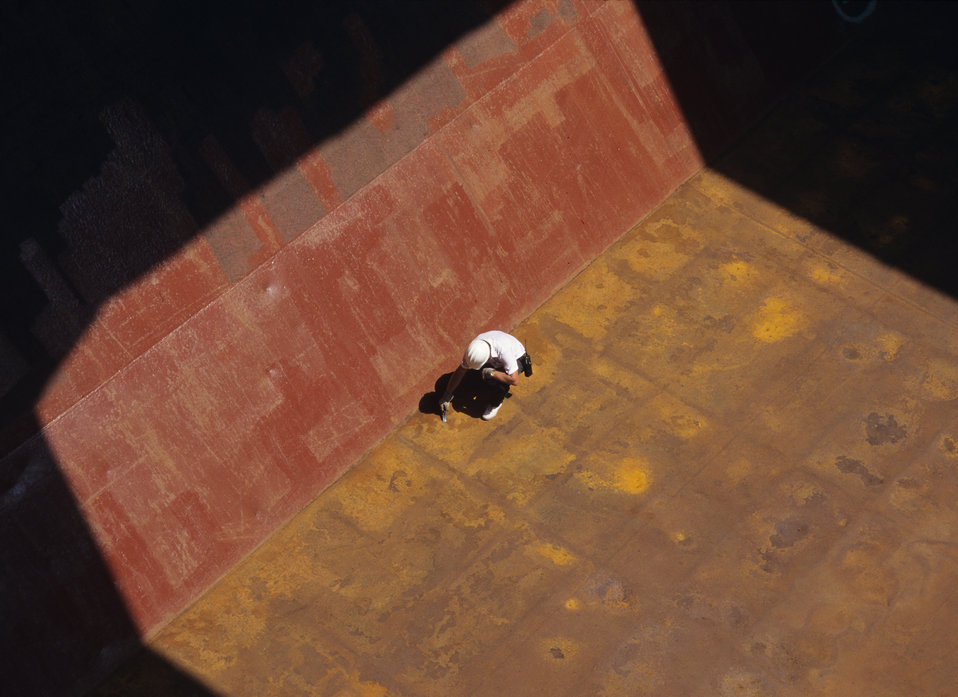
A U.S. Department of Agriculture (USDA) Grain Inspection, Packers and Stockyards Administration (GIPSA) Federal Grain Inspection and Weighing Services (FGIS) agent kneels to closely examine the ship’s hold stowage floor prior to loading at the Bunge Grain Facility in Destrehan, LA on Sept. 1, 1996. USDA GIPSA offers inspection services for rice upon request on a fee basis for both domestic and export shipments. Rice inspection services are divided into two basic types: inspection for grade or factor analysis without grade. Inspection for grade involves analyzing the sample according to the quality factors listed in the Official U.S. Standards for Rice and certifying the applicable numeric grade designation, the quality factors responsible for the grade assignment, and any other quality factors the customer requests. Factor analysis involves the analysis of quality factors requested by the applicant for service without the certification of an applicable numeric grade designation. Factors requested by applicants might include free fatty acid, total oil and free fatty acid, stain as a count, broken in brown rice, false smut, and aflatoxin. Official inspections result in the issuance of an official certificate, which reports the grade of the rice. U.S. and international buyers rely on official USDA inspection certificates to provide accurate, official descriptions of the grade, class, and condition of the inspected rice. Official certificates are receivable by all offices and all courts of the United States as prima facie evidence of the truth of the statements stated thereon.